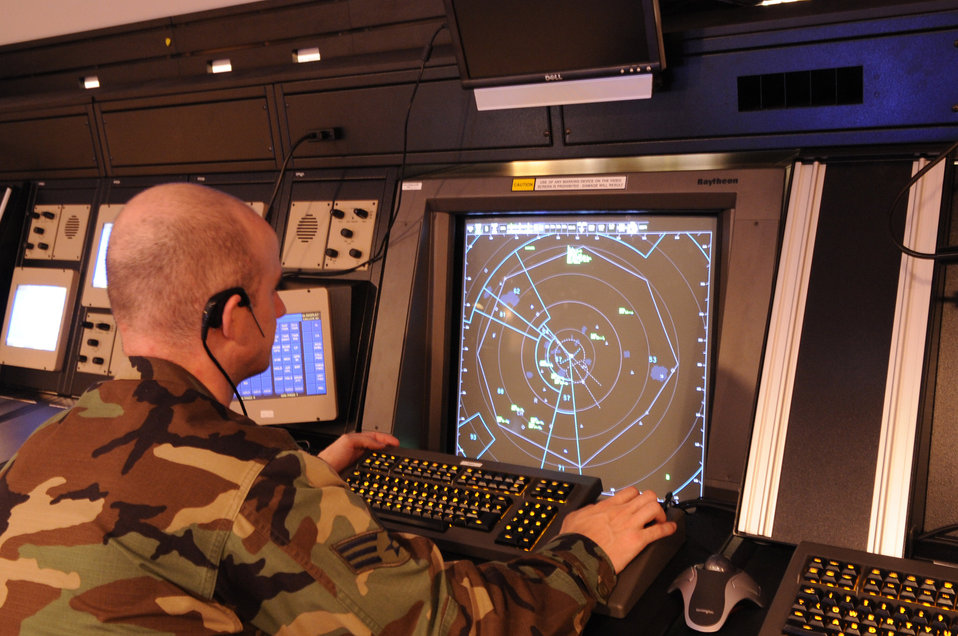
New radar facility to open

Senior Airman Scott Causey examines the new Standard Terminal Automation Replacement System June 17 at Ellsworth Air Force Base, S.D. STARS is a part of the noncontiguous, co-located radar approach control facility. The facility will control both Ellsworth AFB and Minot AFB, N.D. Airman Causey is a 28th Operations Support Squadron air traffic control journeymen.